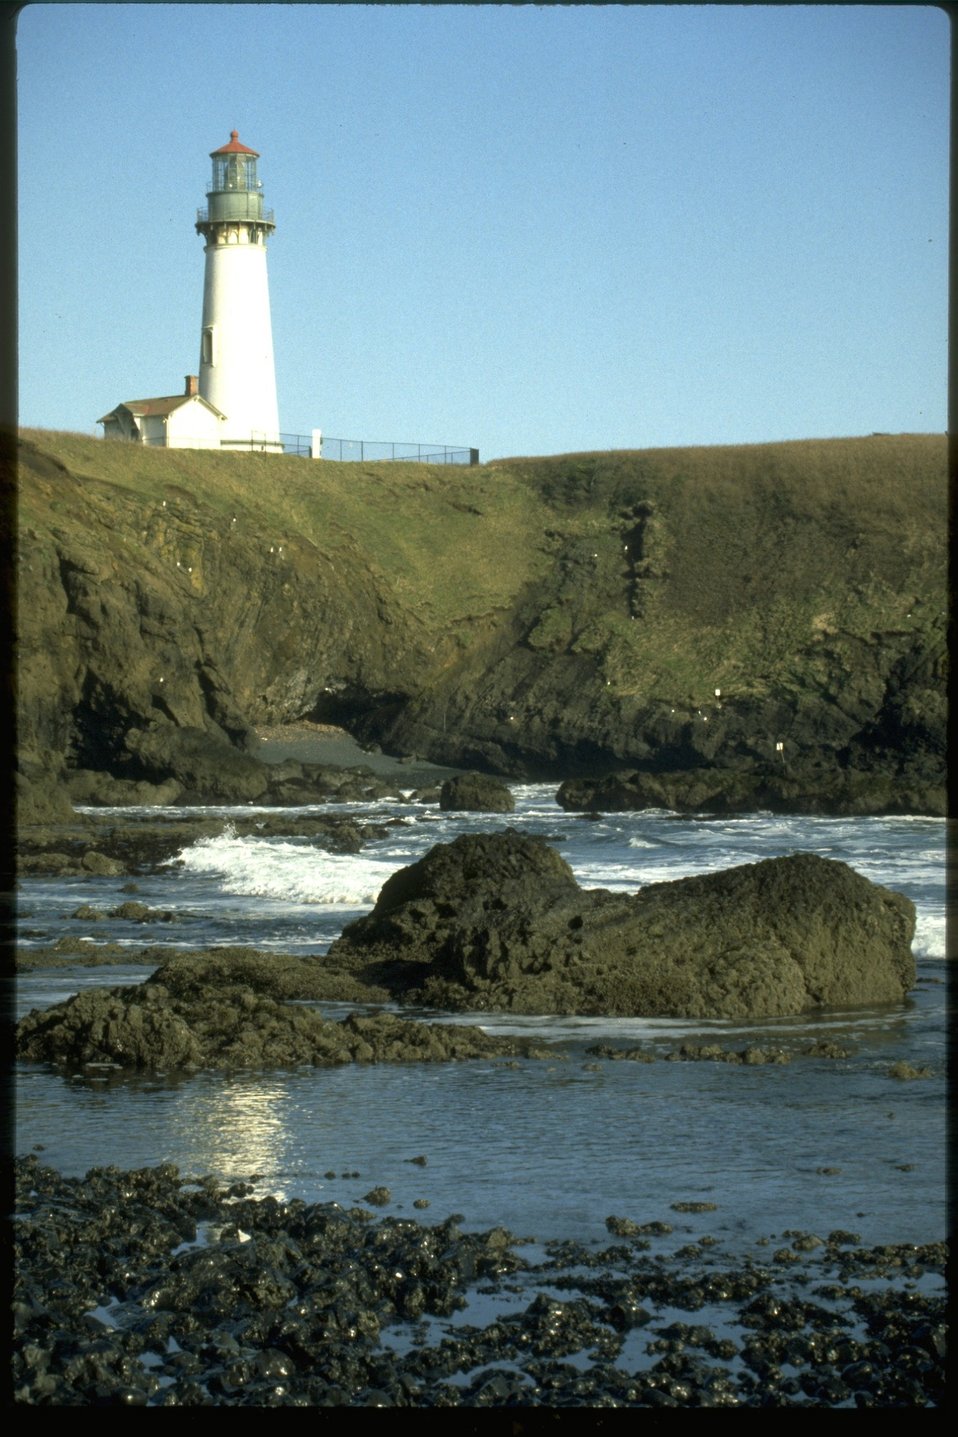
Yaquina Head Light House